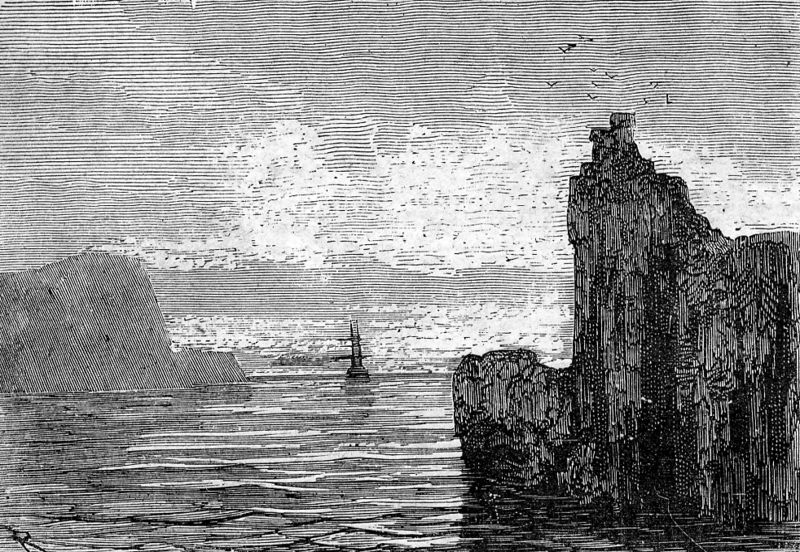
An ilustration from the novel 'In Search of the Castaways; or Captain Grant's Children' by Jules Verne drawn by Édouard Riou. Polski: Ilustracja powieści Juliusza Verne'a 'Dzieci kapitana Granta' autorstwa Édouarda Riou. Français : 'Les Enfants du capitaine Grant', Édouard Riou.